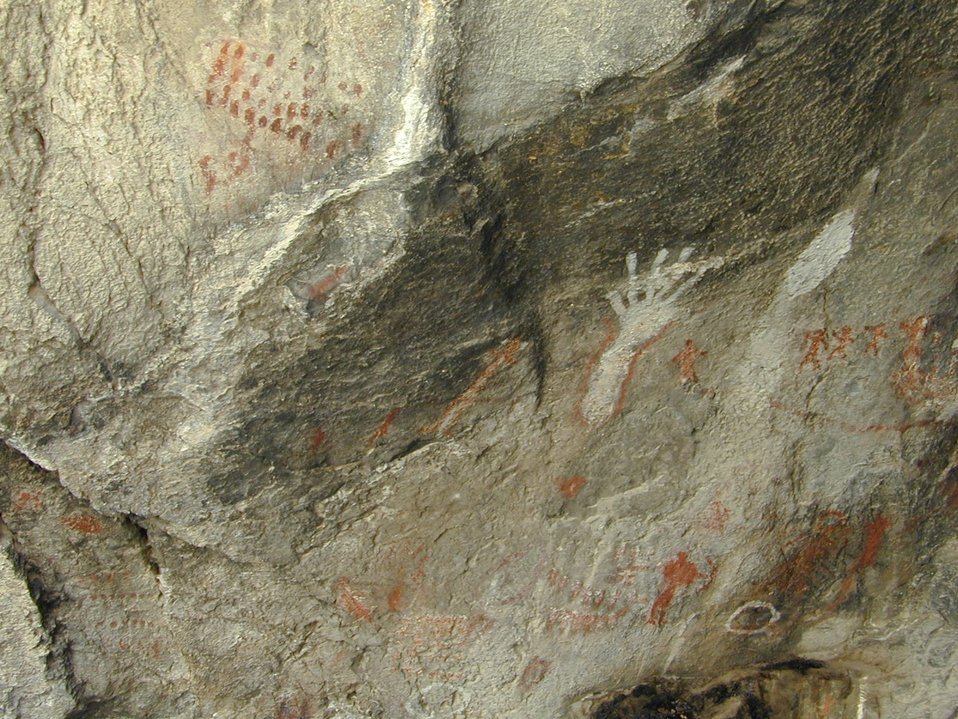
Birch Creek Valley Salmon Field Office Upper Columbia-Salmon Clearwater District